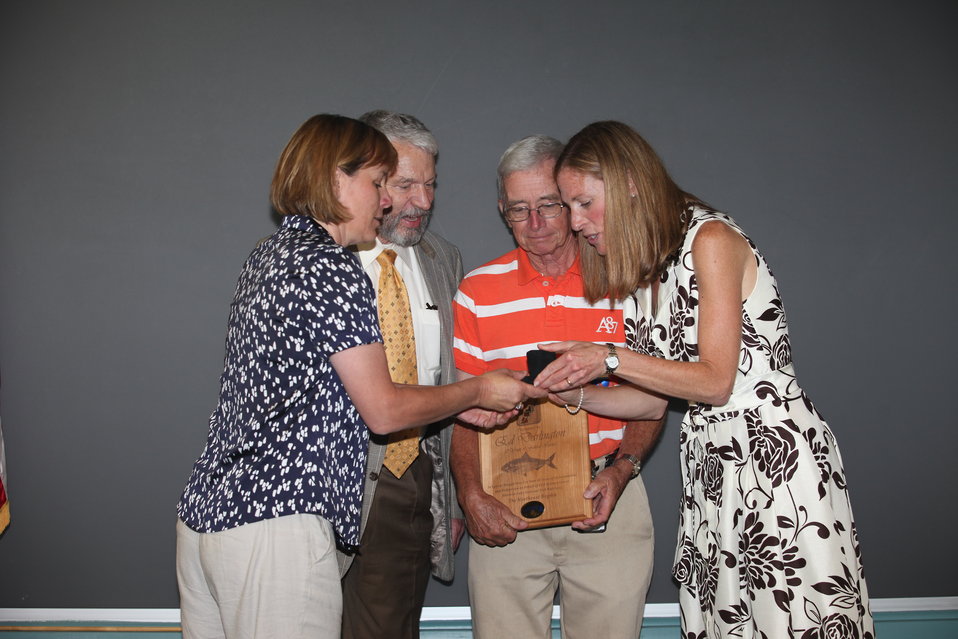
Ed Darlington recieved a special recognition award for 50 years of Service.
From left to right: Deputy Regional Director Deb Rocque, Deputy Director Rowan Gould, Ed Darlington and Regional Director Wendi Weber